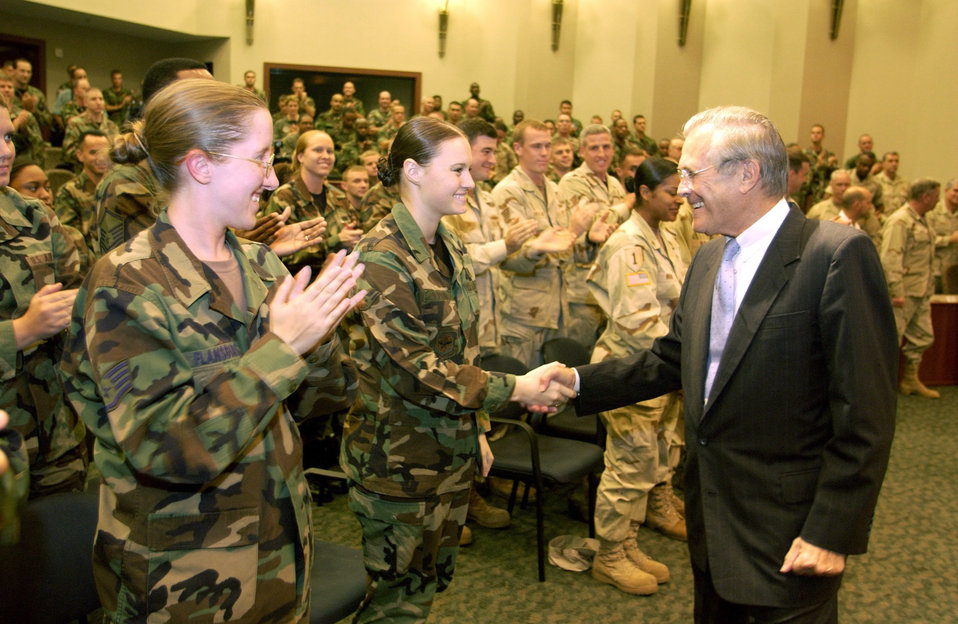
SECDEF visit

MACDILL AIR FORCE BASE, Fla. -- Secretary of Defense Donald H. Rumsfeld meets with Airmen after his town hall meeting in the Davis Conference Center here. The secretary was at the base Oct. 11 to visit servicemembers and the staff at U.S. Central Command and U.S. Special Operations Command.